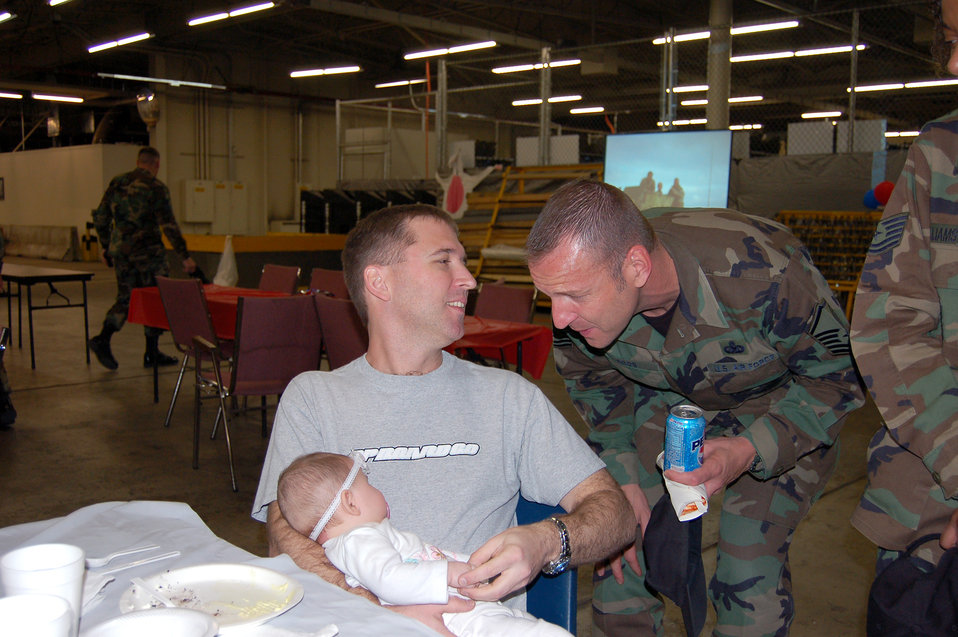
Hill AFB welcomes deployed Airman at Warrior Welcome

Master Sgt. Jason Fisk holds his six-month-old daughter Amelia, whom he met for the first time upon his return from deployment, while talking with Master Sgt. Michael Roos at the Warrior Welcome at Hill Air Force Base, Utah, March 15. Both are assigned to the 75th Logistics Readiness Squadron.